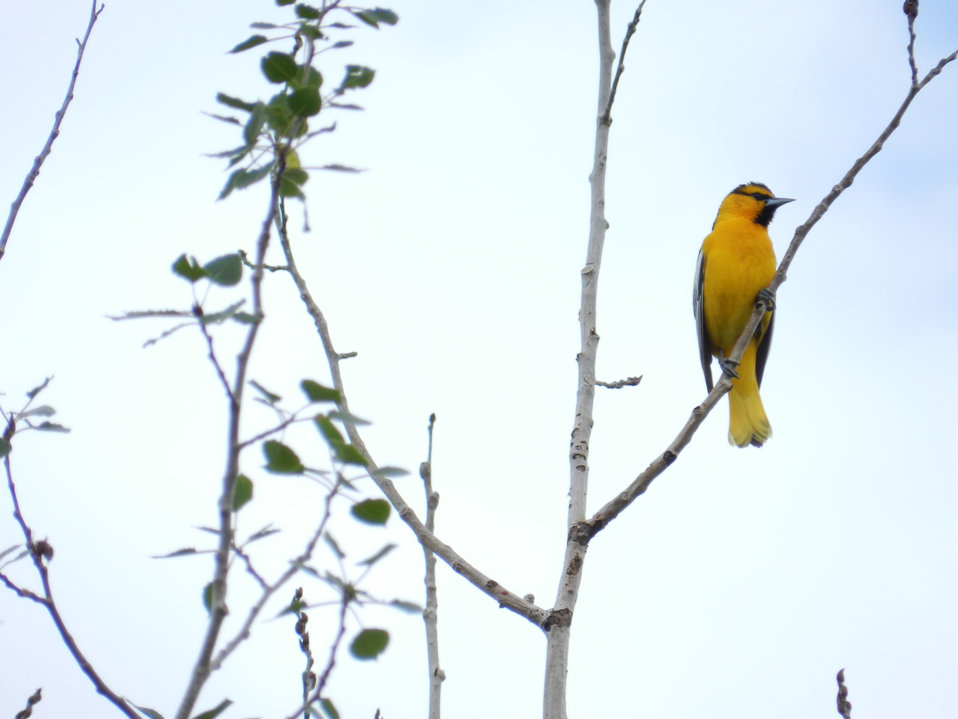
Northern oriole, Fort Collins, CO.

Credit: Pedro 'Pete' Ramirez, Jr. / USFWS